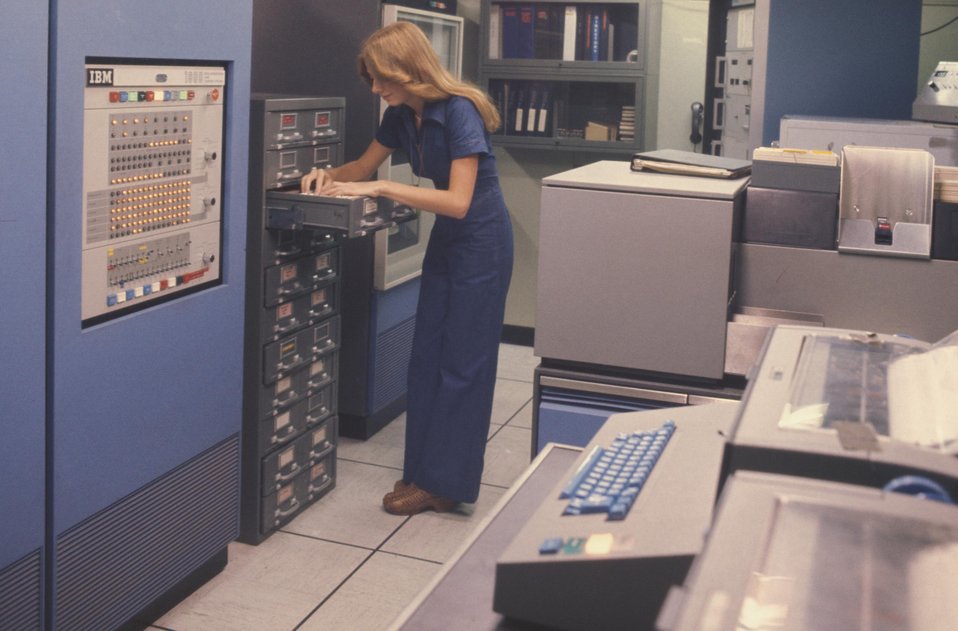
TANK FARM SURVEILLANCE ROOM.

THE COMPUTER AUTOMATED SURVEILLANCE SYSTEM (CASS) CONNECTS INSTRUMENTS LOCATED IN MOST OF THE UNDERGROUND TANKS AND VAULTS CONTAINING NUCLEAR WASTES TO A CENTRALIZED COMPUTER ROOM WHERE PERIODIC READOUTS ARE MONITORED FOR ANY CHANGE IN STATUS. DATA IS COLLECTED AND MONITORED AUTOMATICALLY. MICROPROCESSORS LOCATED IN THE TANK FARMS COLLECT AND TRANS-MIT DATA TO THE CENTRAL COMPUTER. THE OPERATOR ON DUTY MONITORS FREQUENT REGULAR REPORTS. A SECOND COMPUTER ALSO ROUTINELY PROCESSES DATA FROM THE WELLS AROUND THE TANKS.